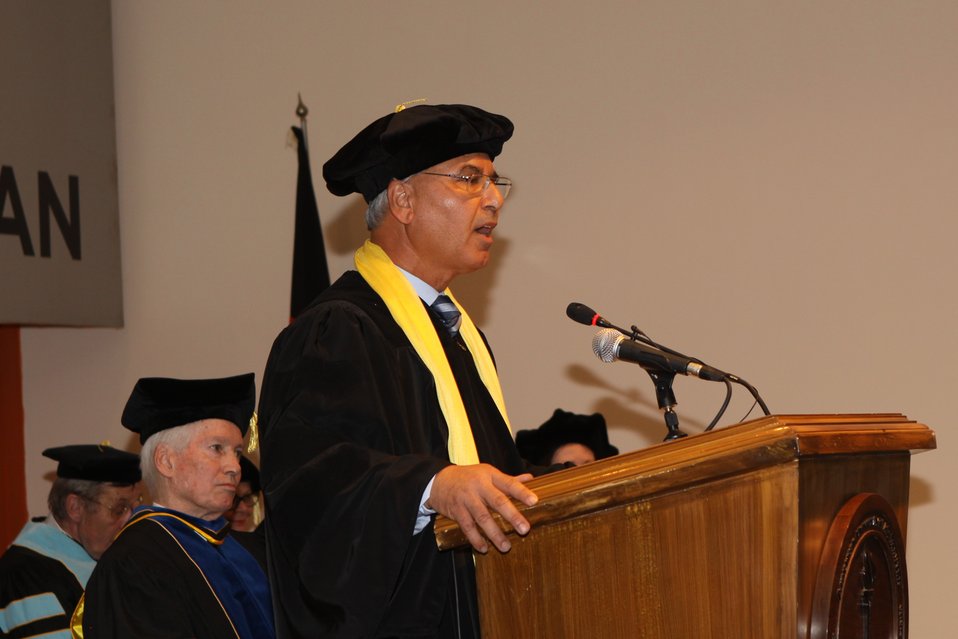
100526 AUAF Graduation 146